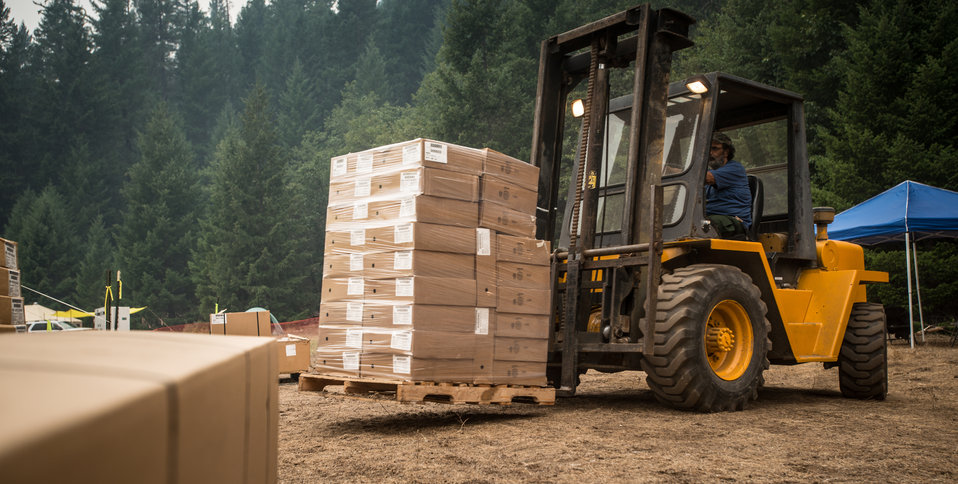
A forklift makes quick work of organizing the Supply yard and getting large orders onto trucks heading to firefighters at the Salmon River Complex Fire burning northwest of Sawyers Bar and west of Etna and Yreka, CA in the Klamath National Forest, on Tuesday, Aug. 6, 2013. It is vital that when a firefighter needs fire resistant clothing, a Mccloud Tool, Pulaski Axe, Combi Tool, pumps, connectors and hoses to draw water from a portable reservoirs to pressurize hand line (fire hoses), they go to this centralized point to get readily available item for issue or replacement as needed. These supplies have been shipped from the National Interagency Supply Cache System depots and/or other caches to this and other fires across the nation.